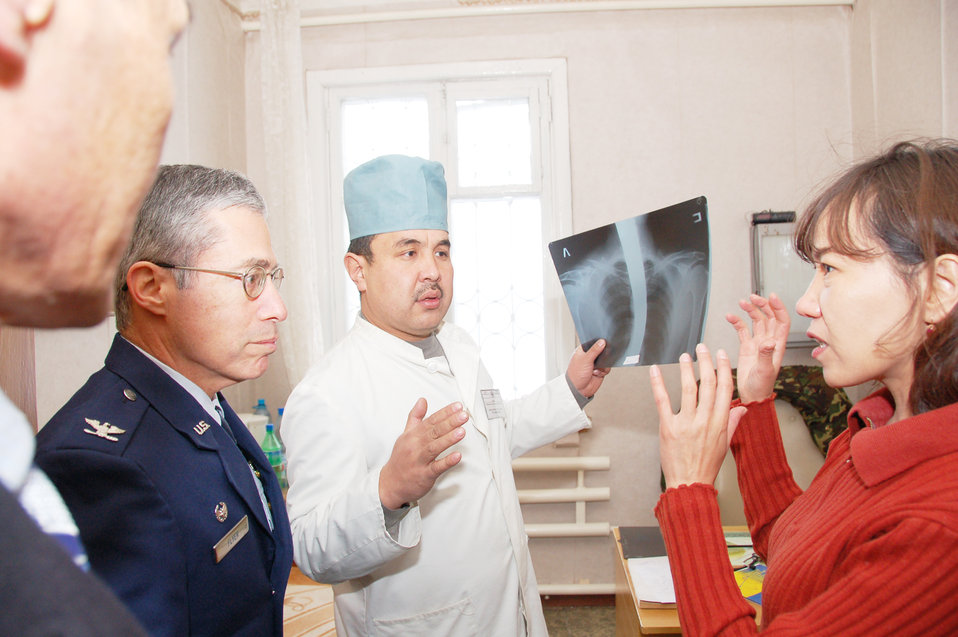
Airmen perform operations with Kyrgyz surgeons

Col. (Dr.) Jerrold Flyer listens as Janyl Sabirova, translator, explains the type injury the colonel will be operating on during a joint surgery Dec. 11, 2009, between him and a Kyrgyz doctor at a Kyrgyz hospital. A team of Airmen from the Transit Center at Manas, Kyrgyzstan, visited the hospital and assisted the Kyrgyz in two separate surgical operations. The joint procedures were part of an ongoing partnership between medical Airmen at the Transit Center and their counterparts at the Besh-Kungei Military Hospital. Doctor Flyer is the 376th Expeditionary Medical Group commander.